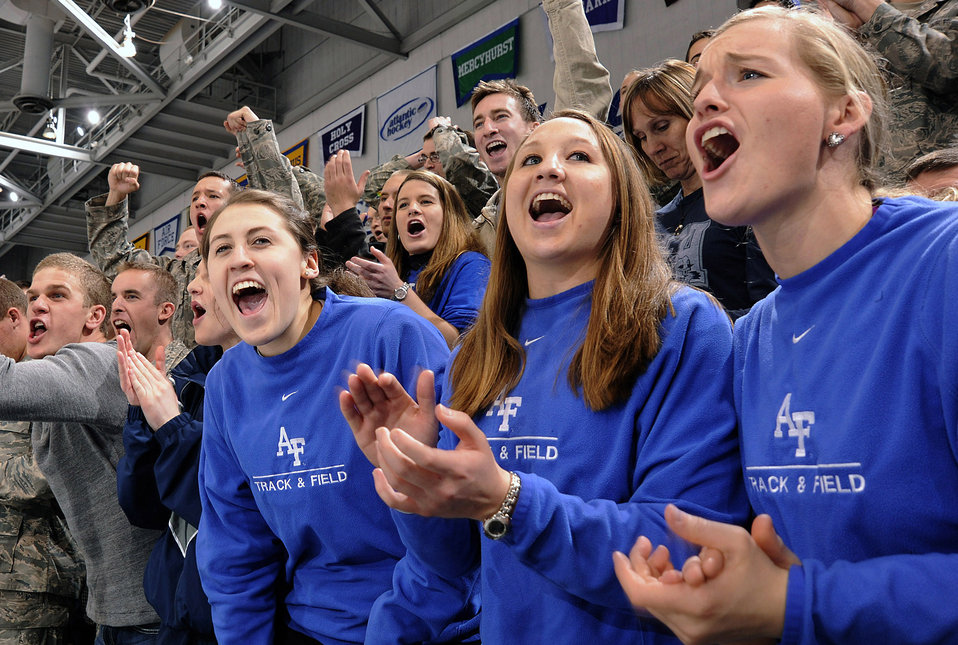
Falcons Split Two-Game Series

Air Force Academy cadets cheer for their Falcons hockey team during a match against Army Jan. 15, 2011, at the Cadet Ice Arena. The crowd of 3,019 was the second-largest of Air Force's season. Air Force and Army split the series, with the Falcons winning, 5-1, Jan. 14 and losing, 5-4, Jan. 15.